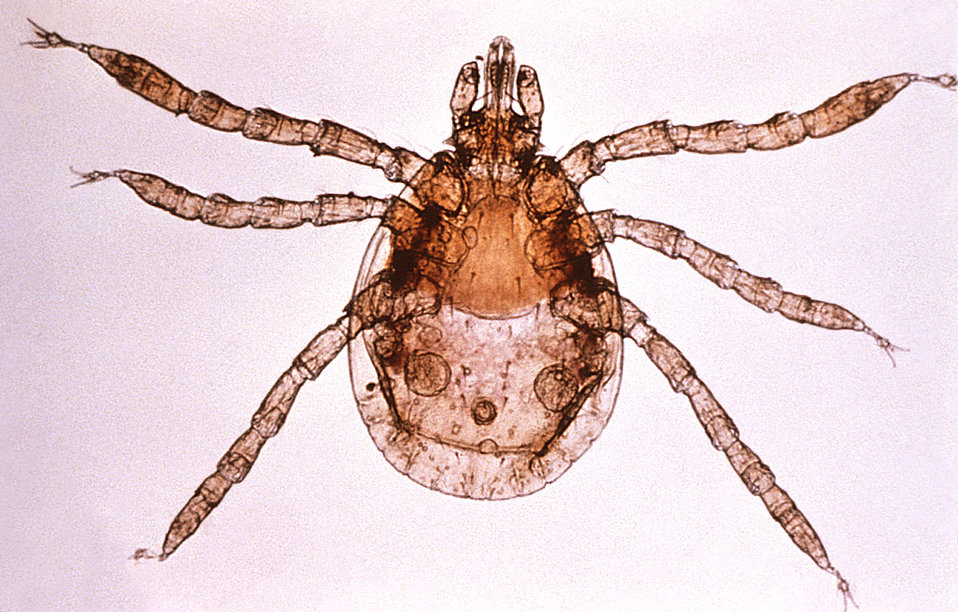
This is a ventral view of a larval Ixodide, Dermacentor marginatus hard tick that has been cleared and mounted.